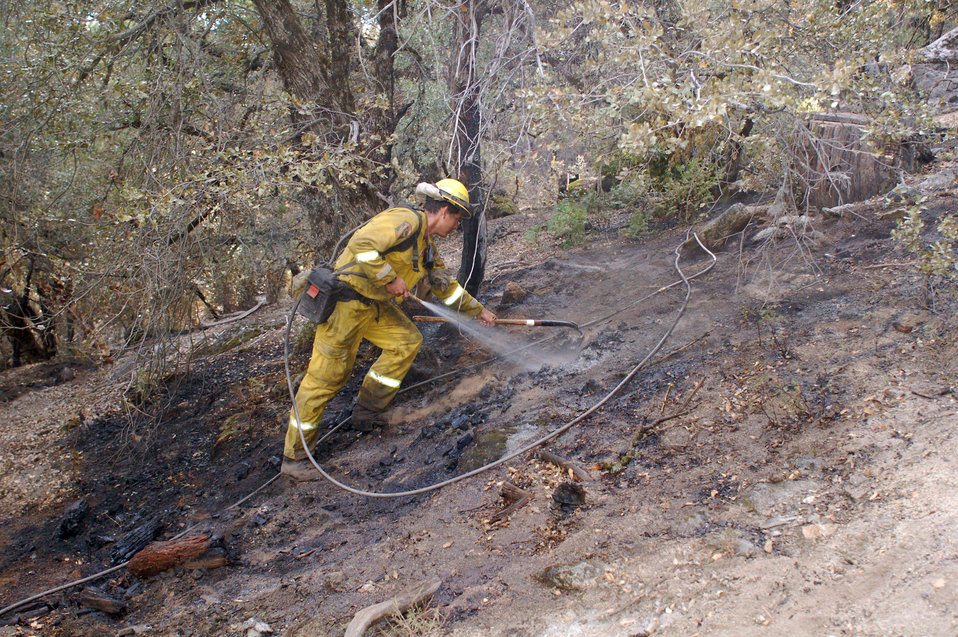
A firefighter uses hand tool and hose to extinguish flames at the Power Fire in California. The Power Fire in the Stanislaus National Forest near Beardsley Reservoir in California began on Aug. 5, 2013 is under investigation. The fire has consumed 881 acres and is 32% contained.